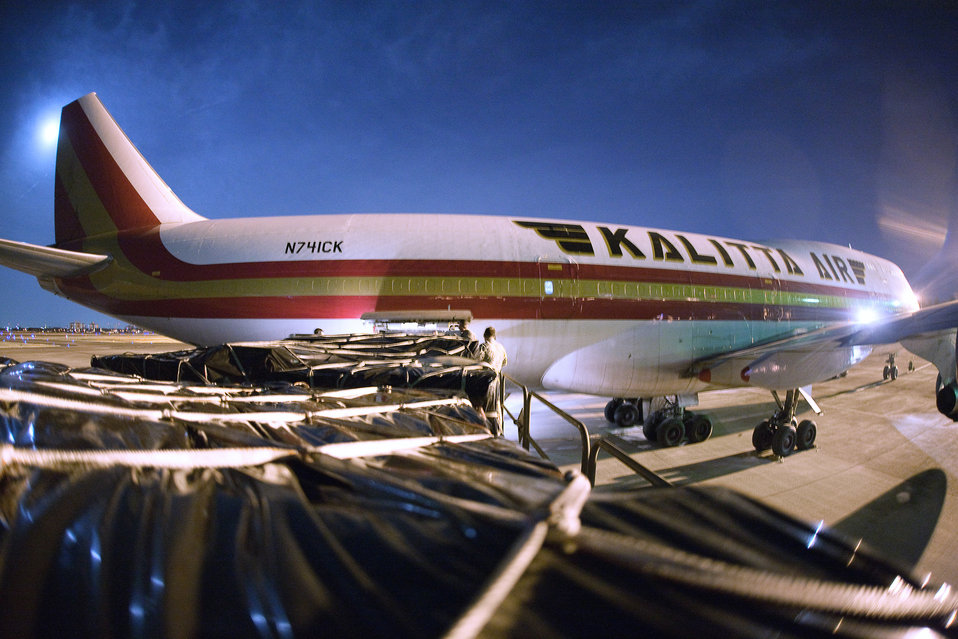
Delivery supplies arrive at Yokota

YOKOTA AIR BASE, Japan -- An international charter aircraft arrives here March 19 with delivery of 95 tons of blankets, plastic sheeting, hygiene supplies, soap and jerry cans to assist with earthquake and tsunami relief effort.